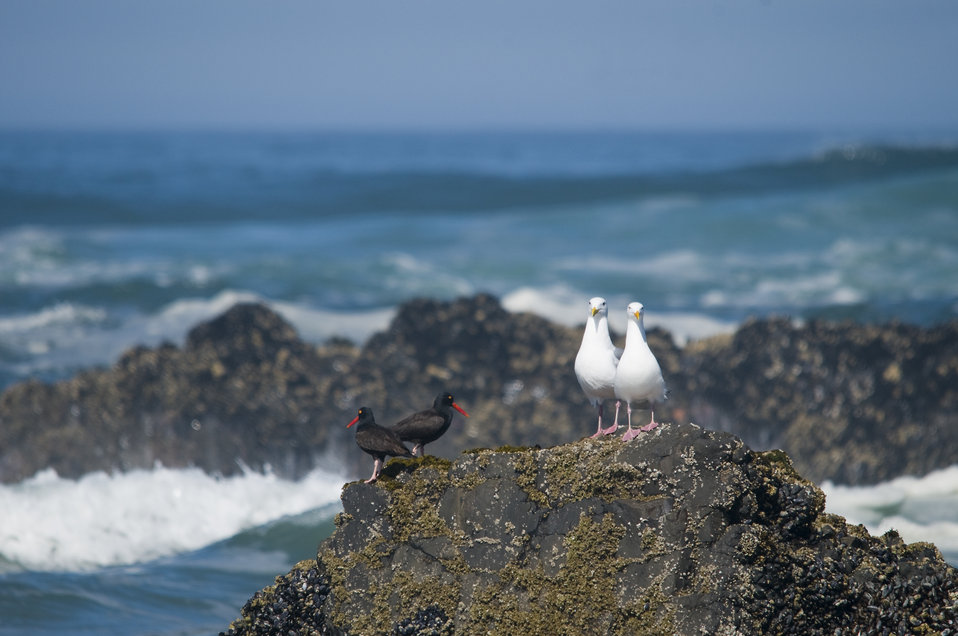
Black Oystercatchers & Western Gulls

Black Oystercatchers and Western Gulls nest within Oregon Islands, Three Arch Rocks, and Cape Meares National Wildlife Refuges